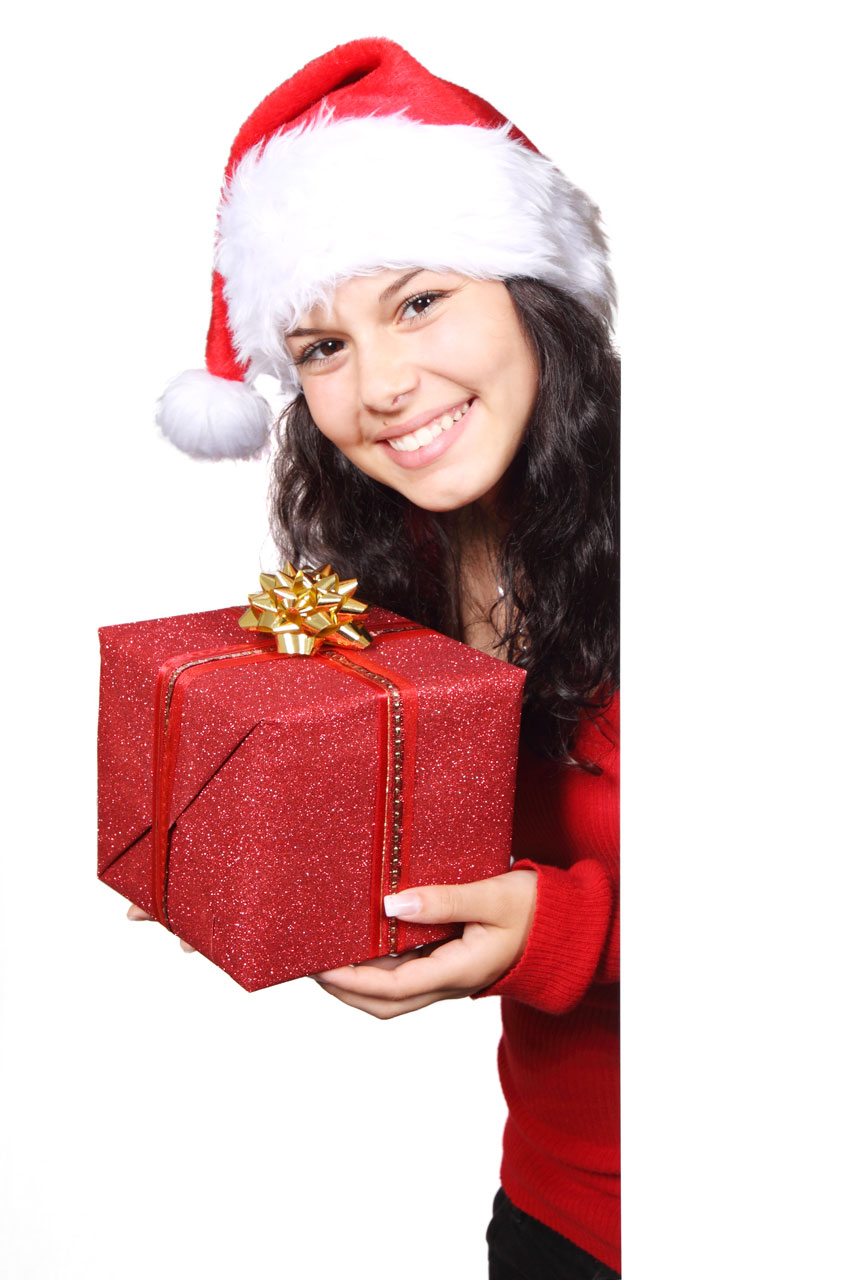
Santa with present

Cute santa with present hiding behind white board.